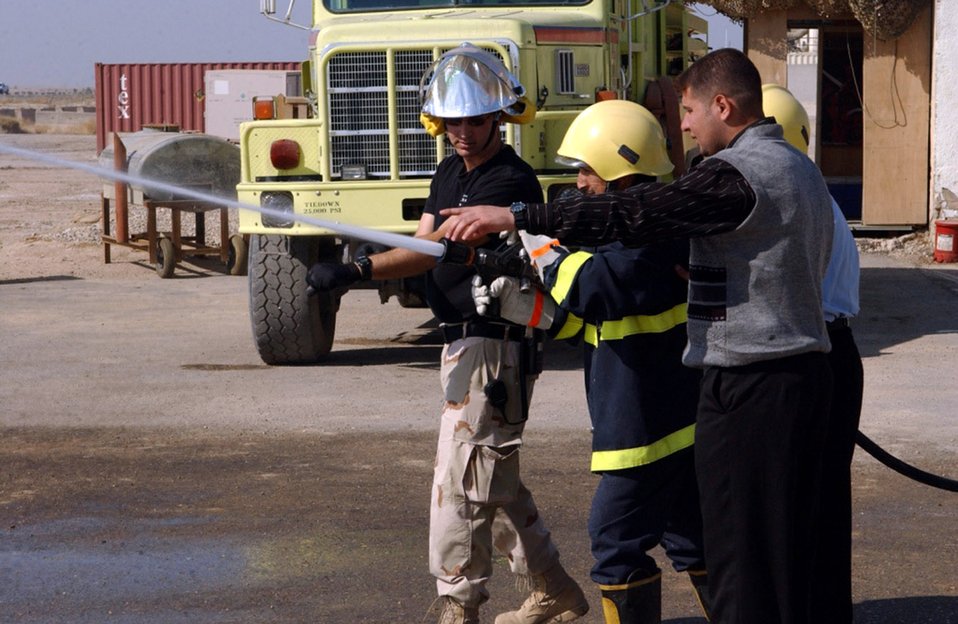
Firefighter brotherhood reaches across international borders

Master Sgt. Christian Anderson shows an Iraqi firefighter how to adjust the flow of water using Air Force equipment Feb. 6 at Ali Base, Iraq. Thirteen local Iraqi firefighters have been trained by members of the 407th Expeditionary Civil Engineer Squadron. Sergeant Anderson was the fire department training officer during Air Expeditionary Force 3 and 4.